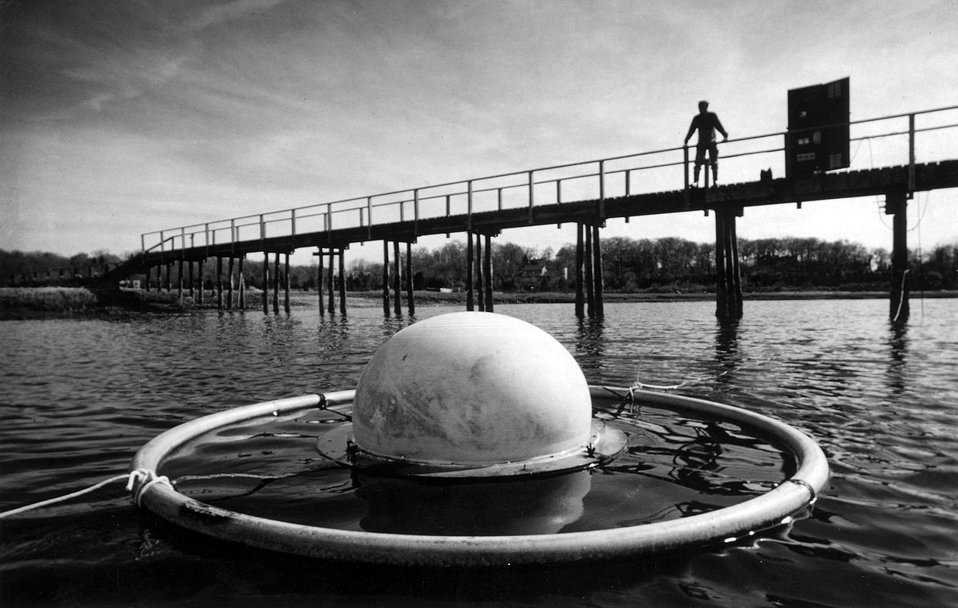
Inverted dome over Flax Pond contains nitrogen which, over time, is displaced by oxygen released from the marsh waters. Oxygen release is measured by a probe in the dome which leads to the instrument panel on the bridge (upper right). c. 1974